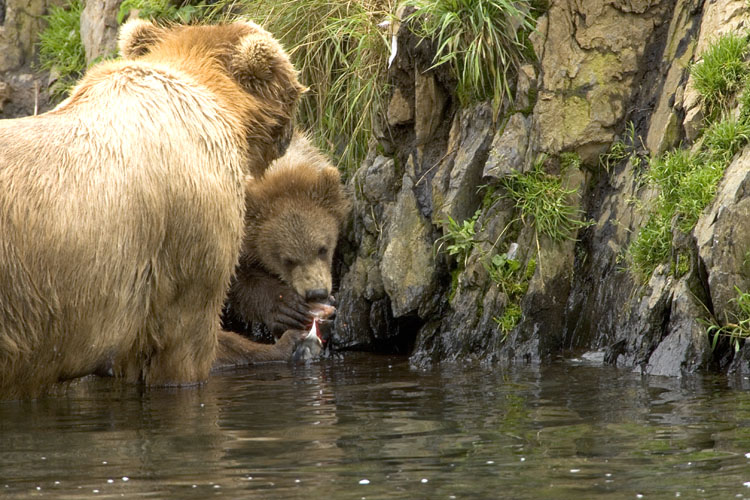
Wildlife of Kodiak Refuge